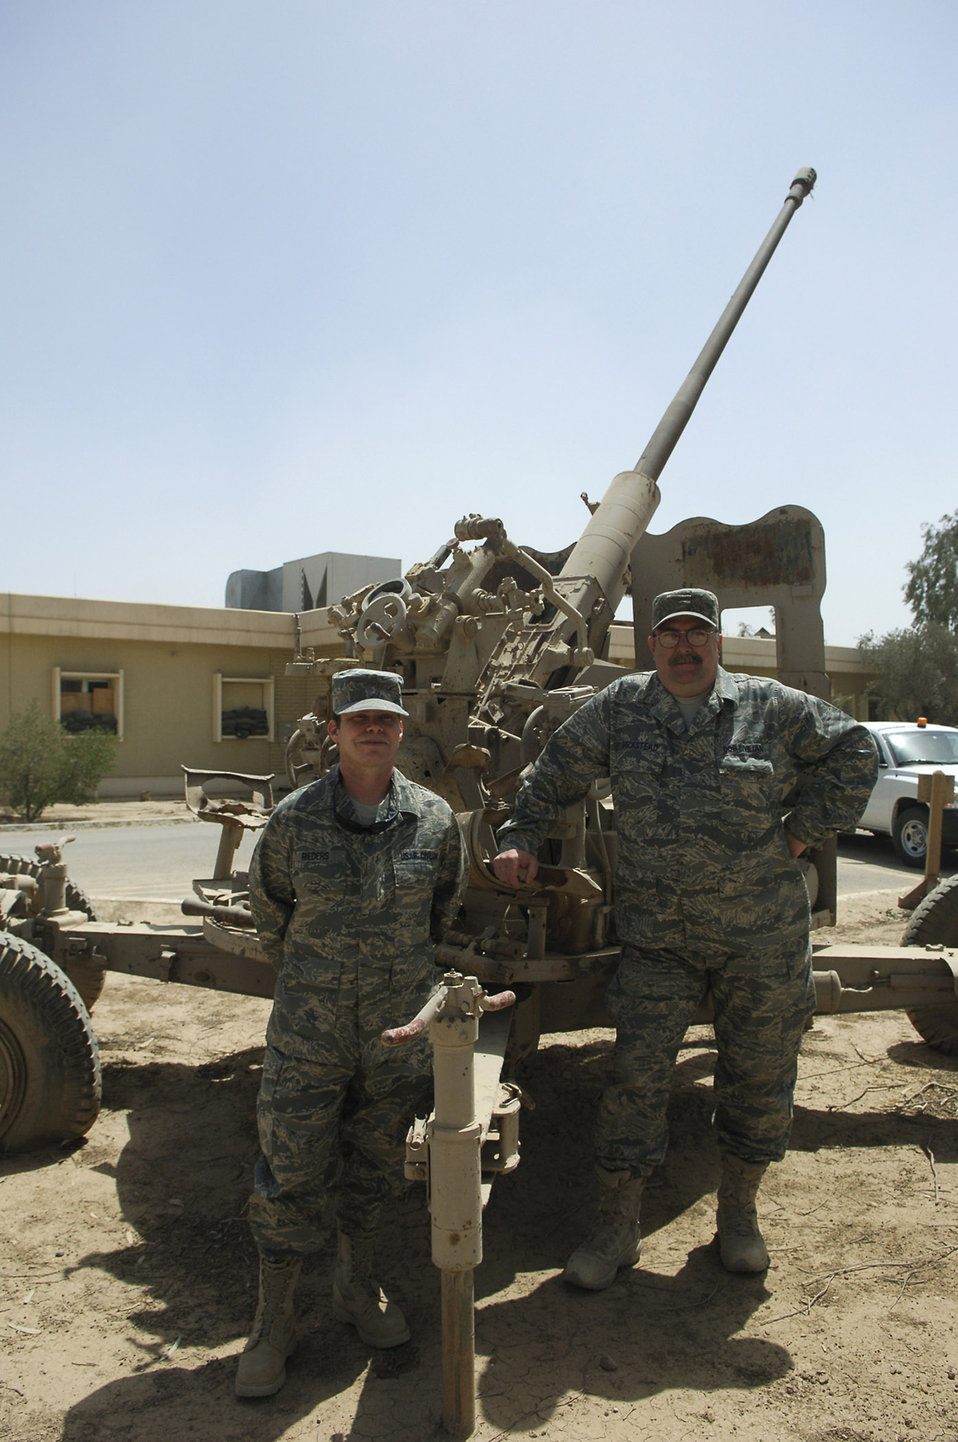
Combat civilians: Writing history as it happens

Doug Beckstead (right) and Kevin Rieders stand in front of an anti-aircraft weapon May 7 at Balad Air Base, Iraq. Mr. Beckstead and Mr. Rieders are literally writing history as Department of Defense civilians deployed to Balad AB as historians in support of Operation Iraqi Freedom. Mr. Beckstead is deployed from Elmendorf Air Force Base, Alaska and Mr. Rieders is deployed from Spangdahlem Air Base, Germany. The weapon was used by the Iraqi military prior to the fall of the Saddam Hussein regime.